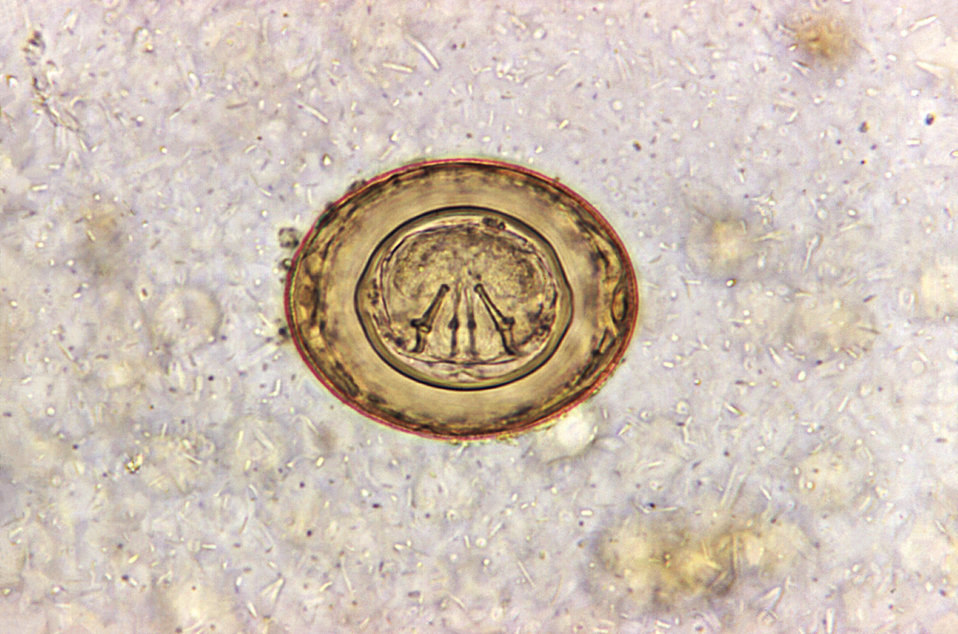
Hymenolepis diminuta egg. Parasite.